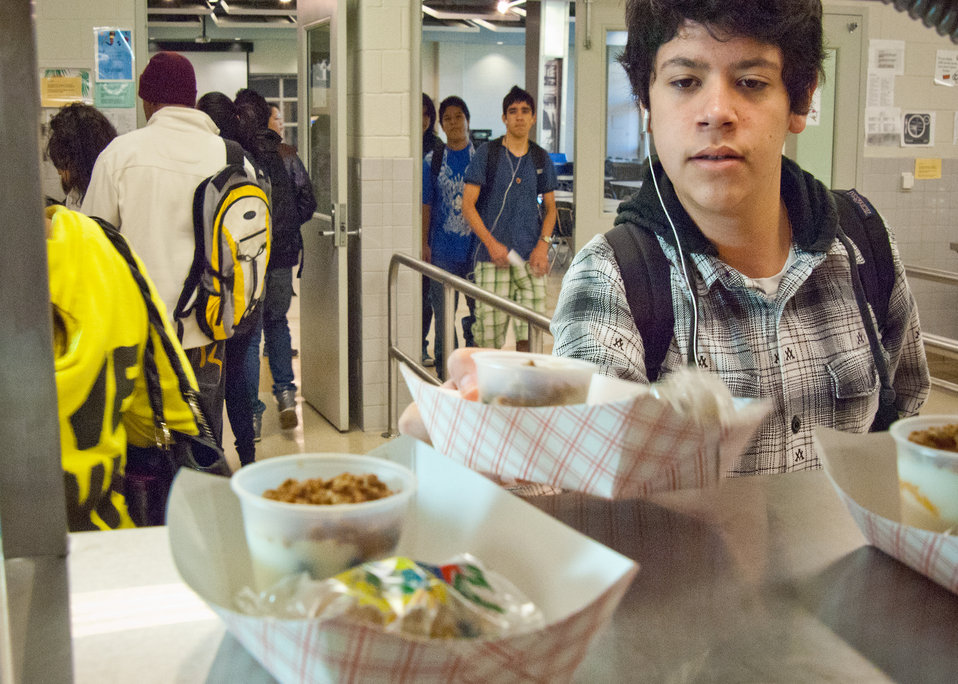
20111025-FNS-RBN-School Lunch

Students at Washington-Lee High School, in Arlington, VA, select a parfait of yogurt, fruit and granola along with a blueberry muffin for breakfast on Wednesday, October 25, 2011. The school breakfast and lunch are prepared by Arlington Public Schools, Food and Nutrition Services. The National School Lunch Program is a federally assisted meal program administered by the United States Department of Agriculture, Food and Nutrition Service operating in public, nonprofit private schools and residential child care institutions. It provides nutritionally balanced, low-cost or free lunches to children each school day.